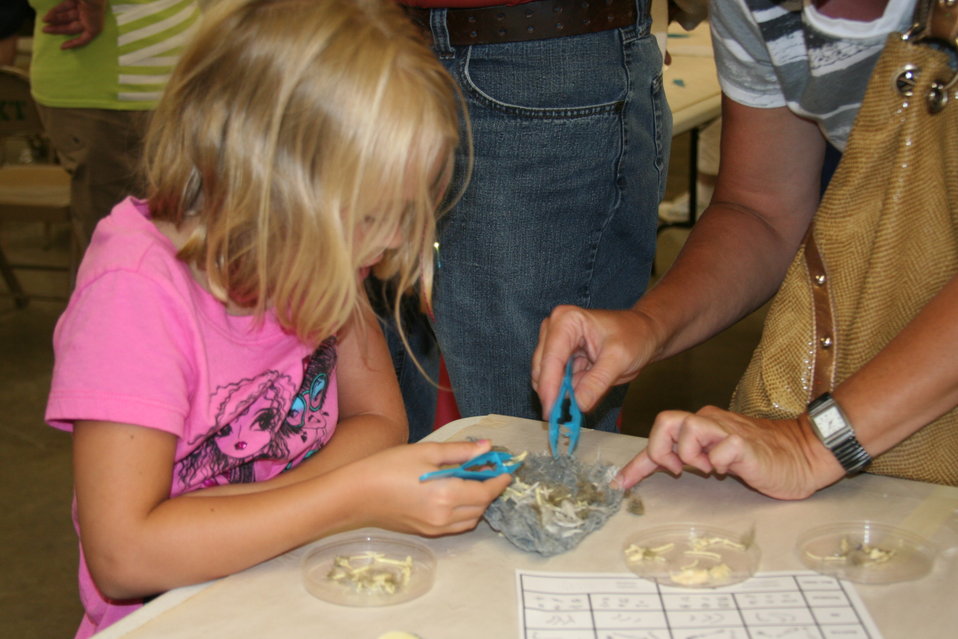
Creatures of the Night 2011

Children finding many different types of small mammal bones in various owl pellets.